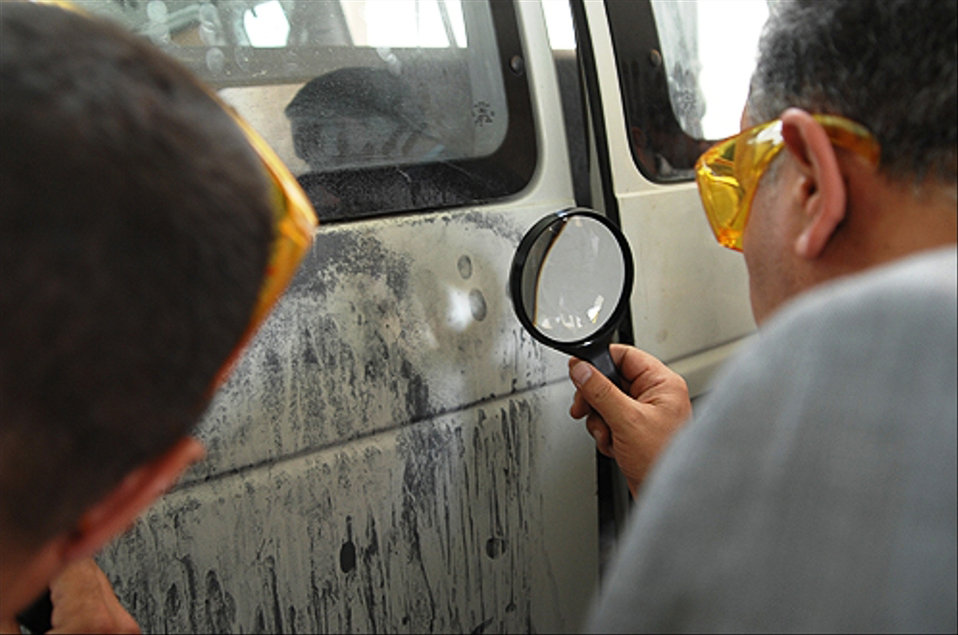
Latent Fingerprints

Law enforcement officers locating latent fingerprints on the side of a van.